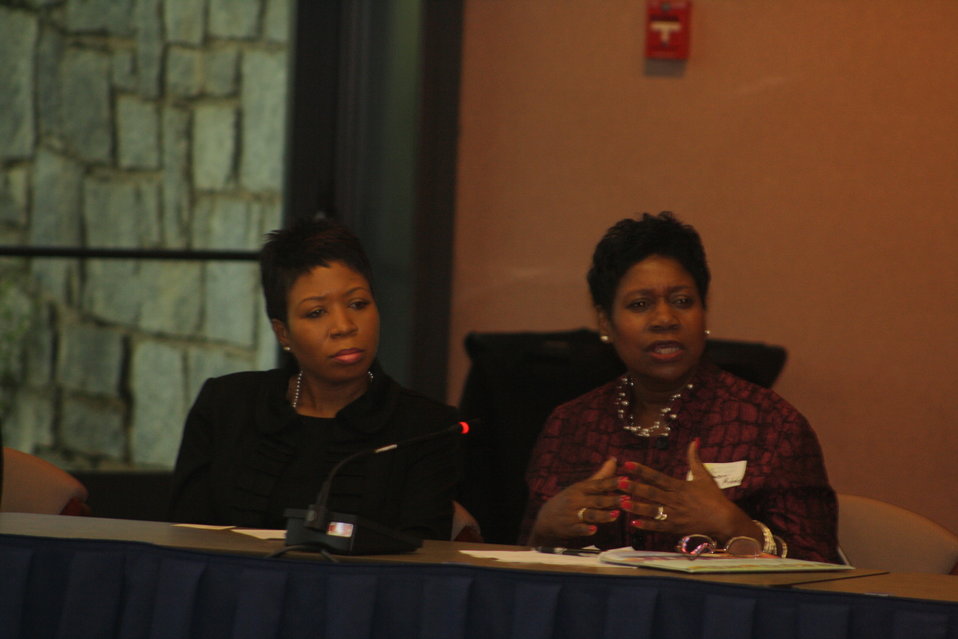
Faith-Based and Neighborhood Partnership launch at Atlanta's Carter Center